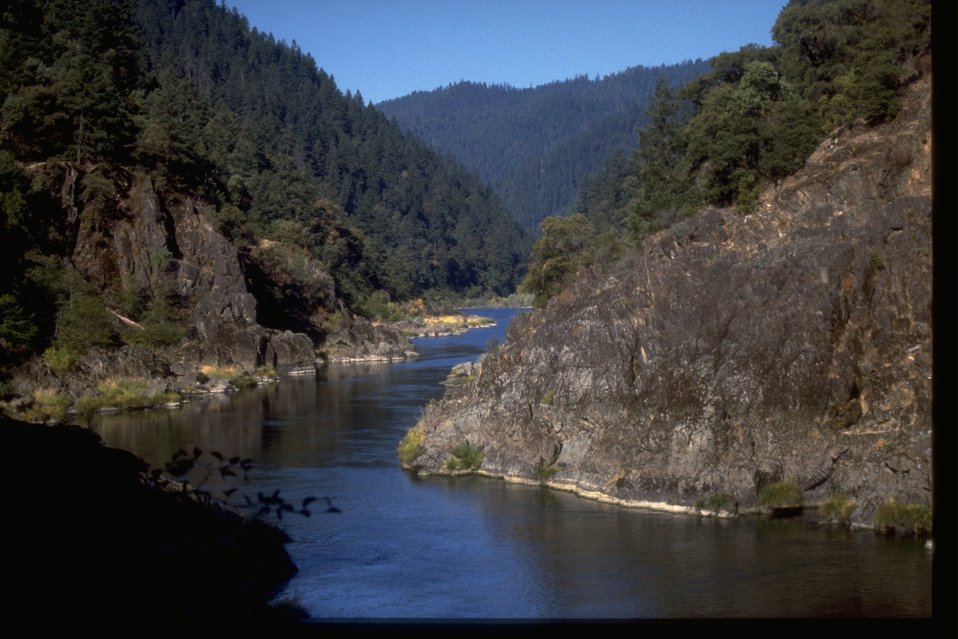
The wild section of the Rogue River below Sanderson.